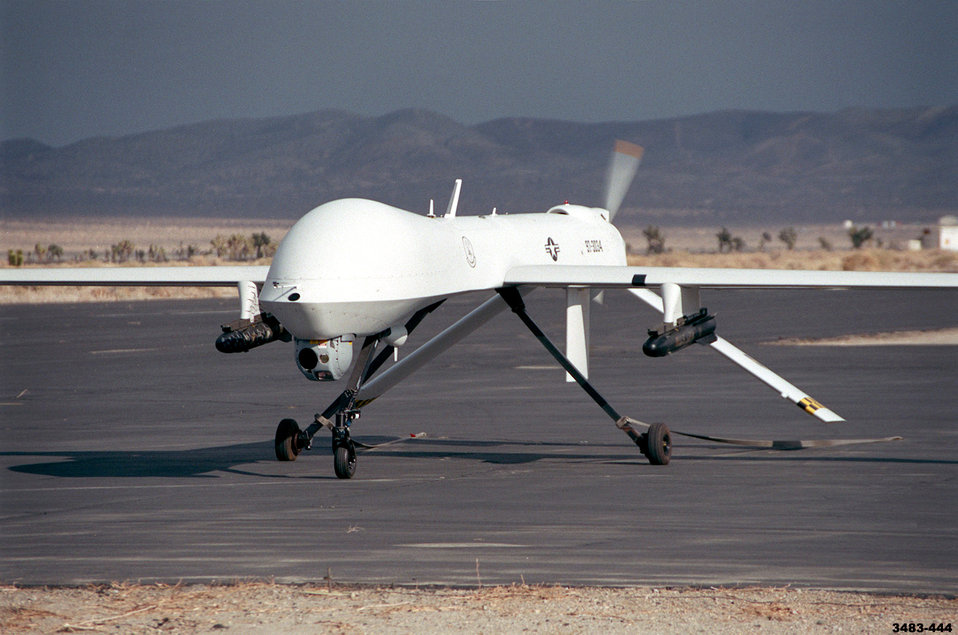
OPERATION ENDURING FREEDOM (AFIE) -- RQ-1 Predator unmanned aerial vehicles, like this one, have been used to increase battlefield awareness at operating locations in support of Operation Enduring Freedom. Intelligence, surveillance and reconnaissance (ISR) assets, including unmanned aerial vehicles, RC-135V/W Rivet Joint, U-2A Dragon Lady, E-3A Sentry airborne warning and control system (AWACS), and EC -130E/H Commando Solo, have flown more than 325 missions to provide battlefield awareness in support of OEF.